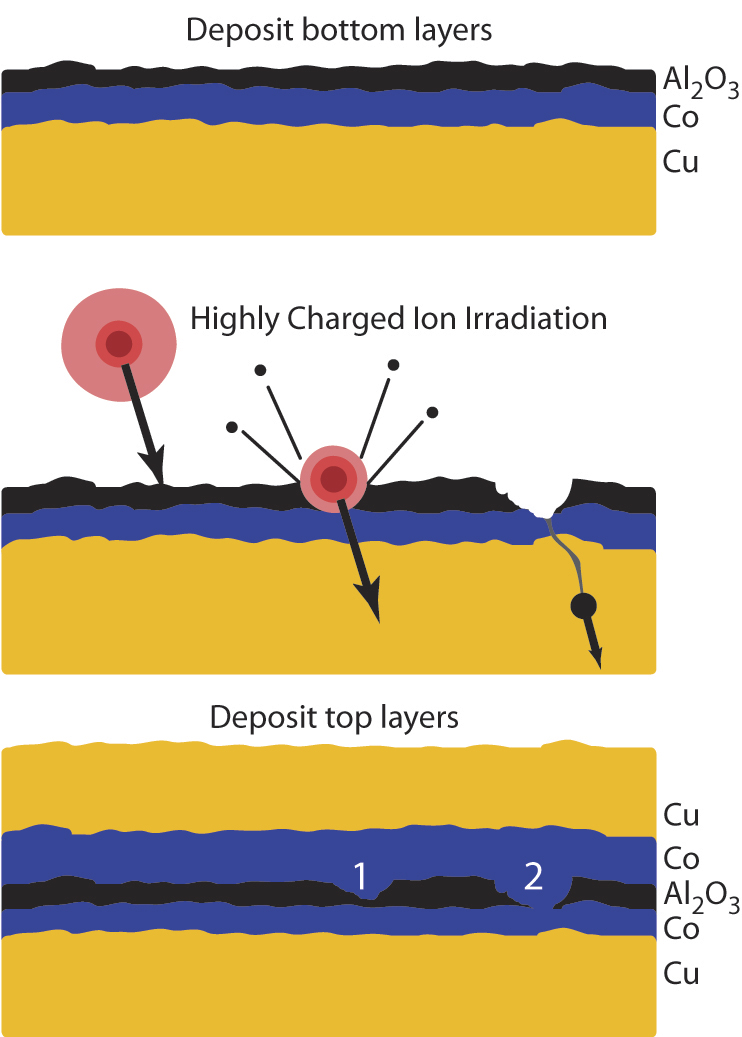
Nanoscale Blasting Adjusts Resistance in Magnetic Sensors

Cartoon illustrates new NIST technique for selectively modifying resistance of a semiconductor device layer. (Top) First layer - in this case a composite of copper and cobalt - and an insulating buffer layer of aluminum oxide is deposited. Buffer is about one nanometer thick. (Middle) Highly charged xenon 44 ions strike the buffer layer, digging nanoscale pits. (Bottom) Top conducting layer of cobalt and copper is deposited. Pits reduce the electrical resistance of the layers and may function as nanoscale GMR sensors embedded in a MTJ sensor.